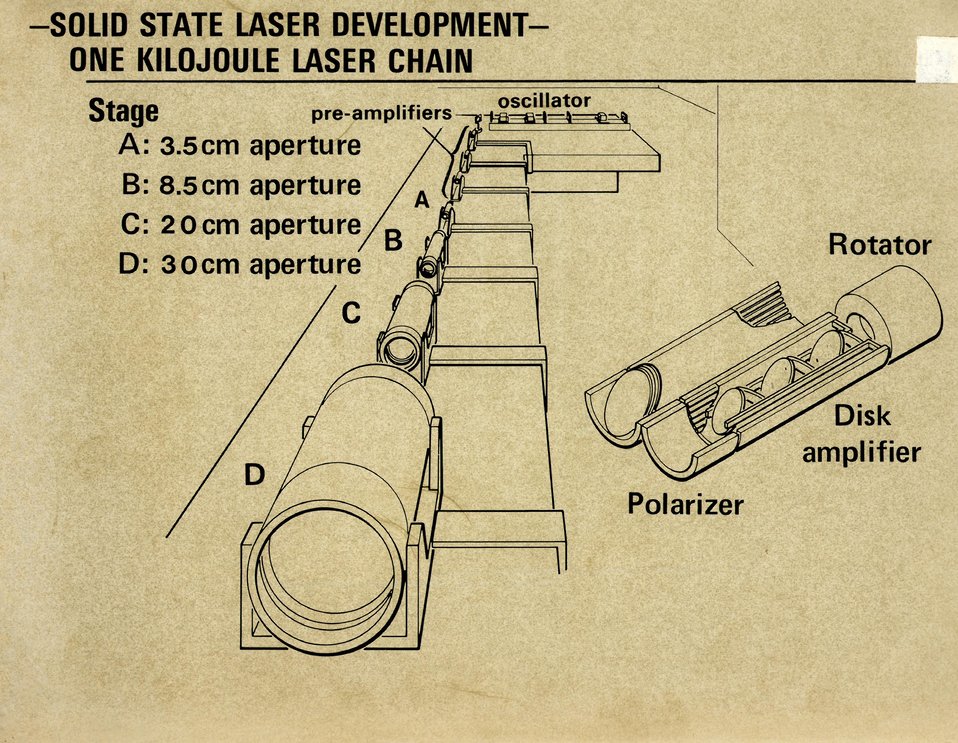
Solid State Laser Development- one kilojoule. Circa 1973.